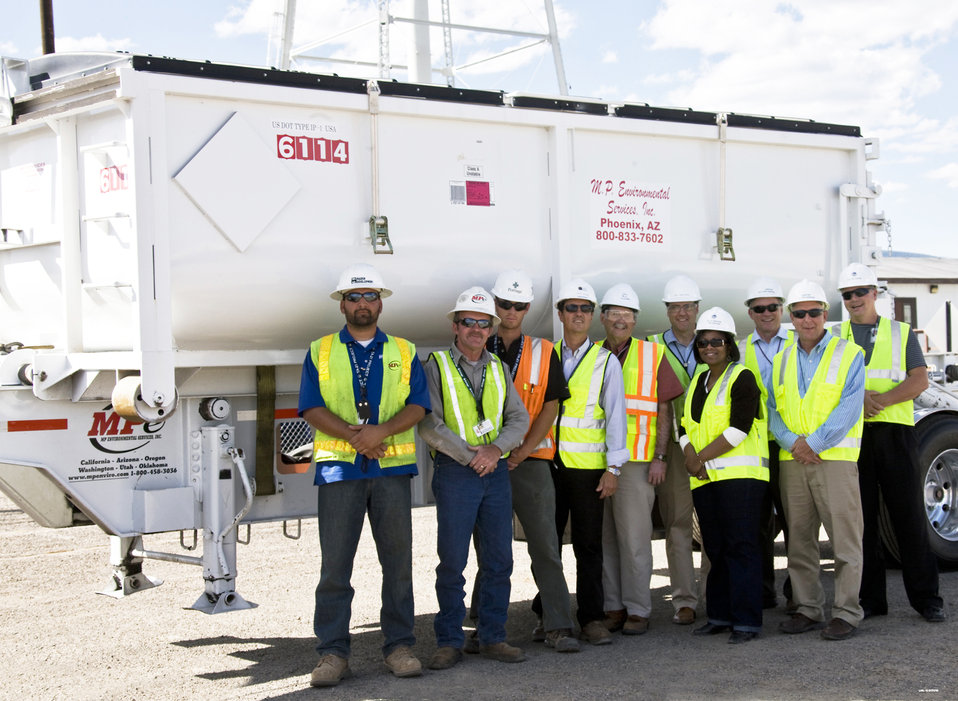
Los Alamos Site Visit

EM Recovery Act Program Director Cynthia Anderson, fourth from right, visited LANL as the last of 246 waste containers from LANL’s Tritium Systems Test Assembly Facility were shipped to a disposal facility in Clive, Utah. Anderson is pictured here with representatives of the National Nuclear Science Administration’s Los Alamos Site Office, Los Alamos National Security, LLC, and MP Environmental Services.